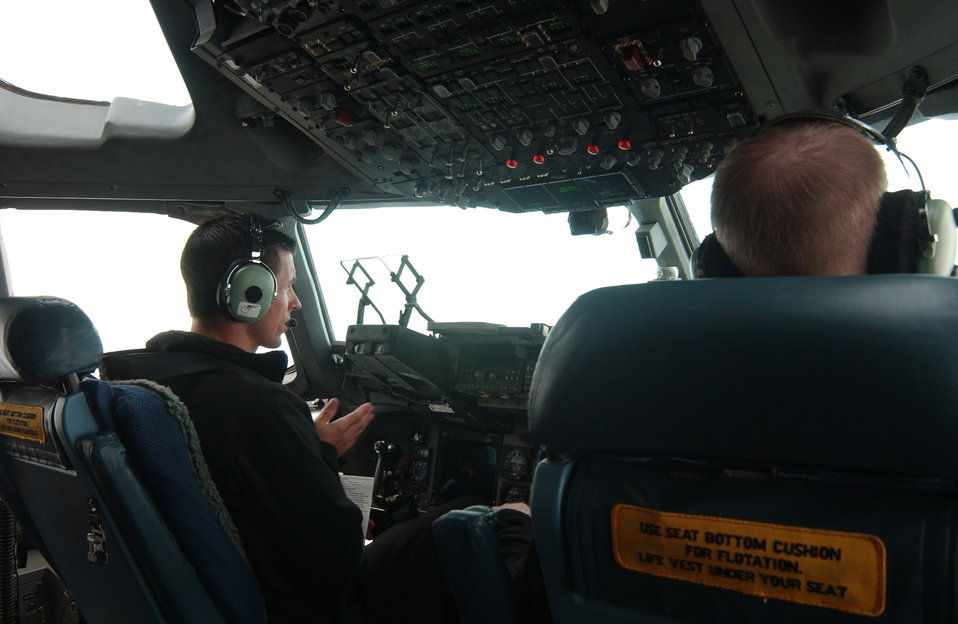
McChord Airmen fuel Operation Deep Freeze

Maj. Doug Soho prepares to take off on a C-17 Globemaster III from the Pegasus ice runway, Antarctica during an Operation Deep Freeze mission Dec. 2. Major Soho is asigned to the 446th Airlift Squadron from McChord Air Force Base, Wash.